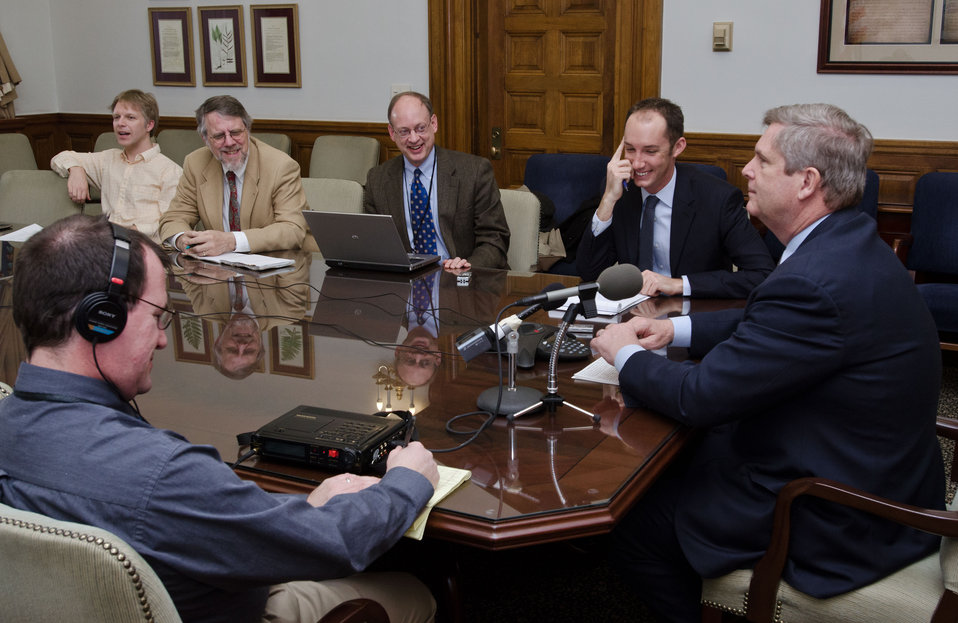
Agriculture Secretary Tom Vilsack (right) listens to a question from a remote reporter during a media conference call and briefing to local reporters (far left – right) Bloomberg’s Alan Bjerga, Reuters’ Chuck Abbott, CQ Roll Call’s Philip Brasher, to review the Agriculture FY2013 budget in Washington, D.C. on Monday, February 13, 2012.